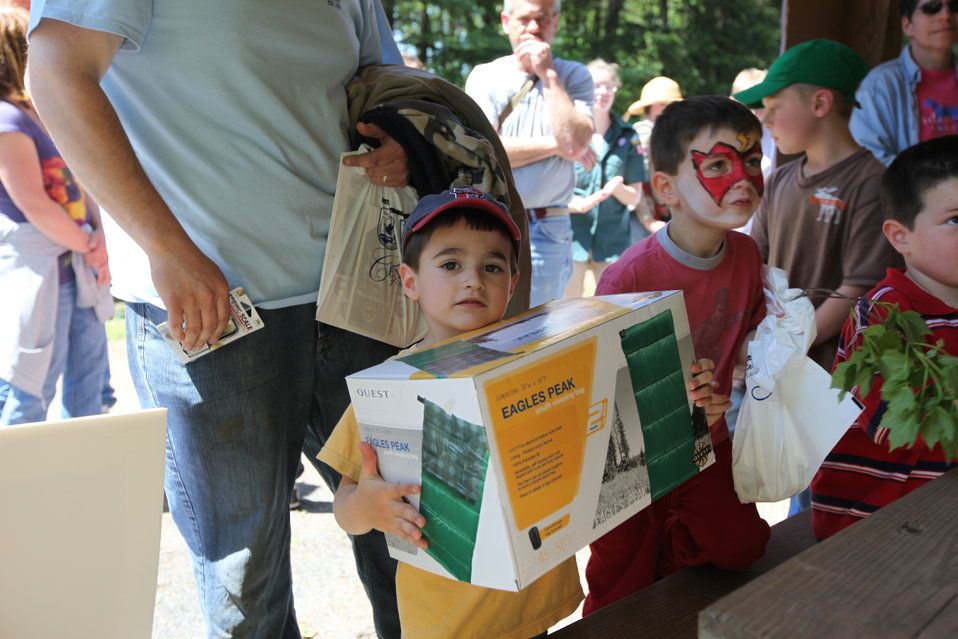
Youth Fishing Derby 2012

Megan Nagel/USFWS